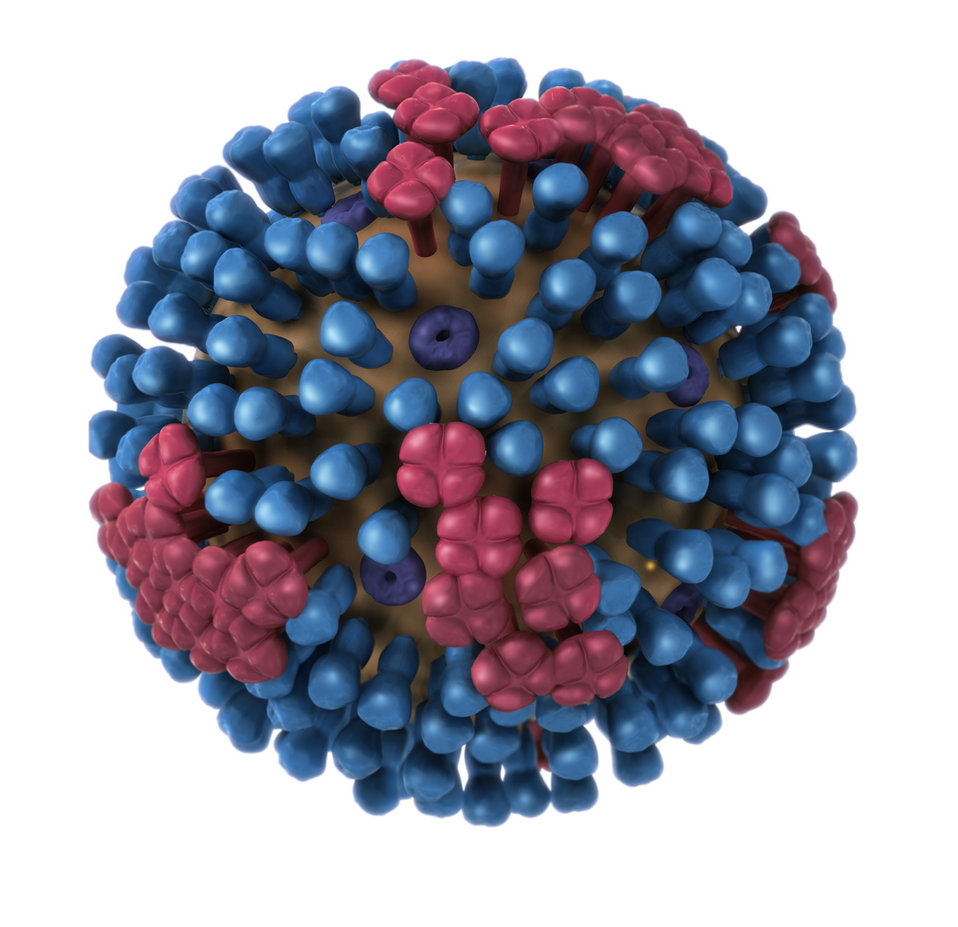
This illustration provides a 3D graphical representation of a generic influenza virion's ultrastructure, and is not specific to a seasonal, avian or 2009 H1N1 virus. See PHIL 11822 for a view of this virus in which a portion of the virion's protein coat, or 'capsid', has been cut away, revealing its inner nucleic acid core proteins, as well as a key identifying the organism's protein constituents.